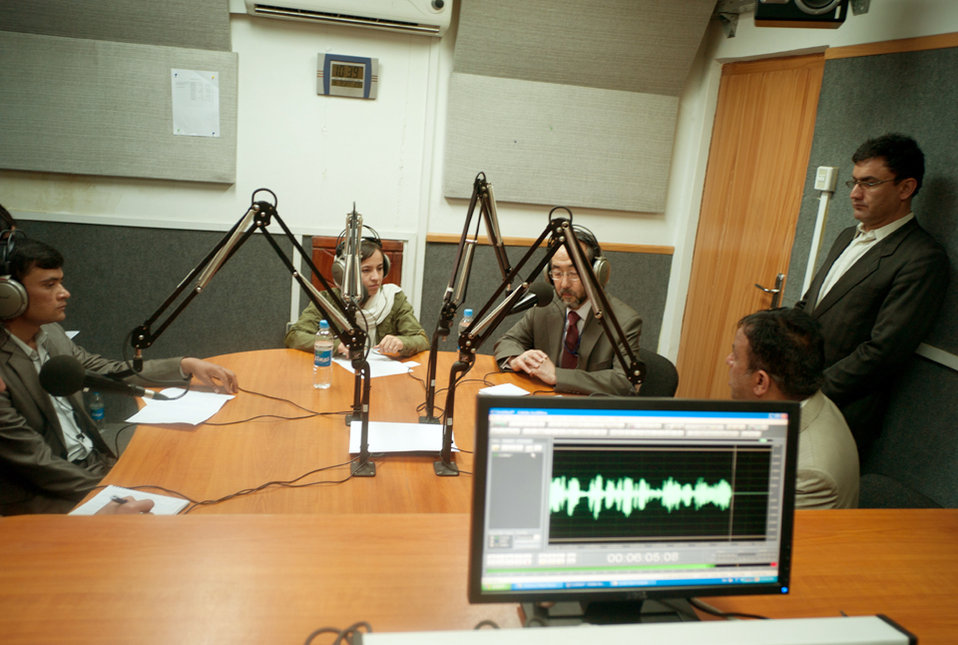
Ken in studio 2